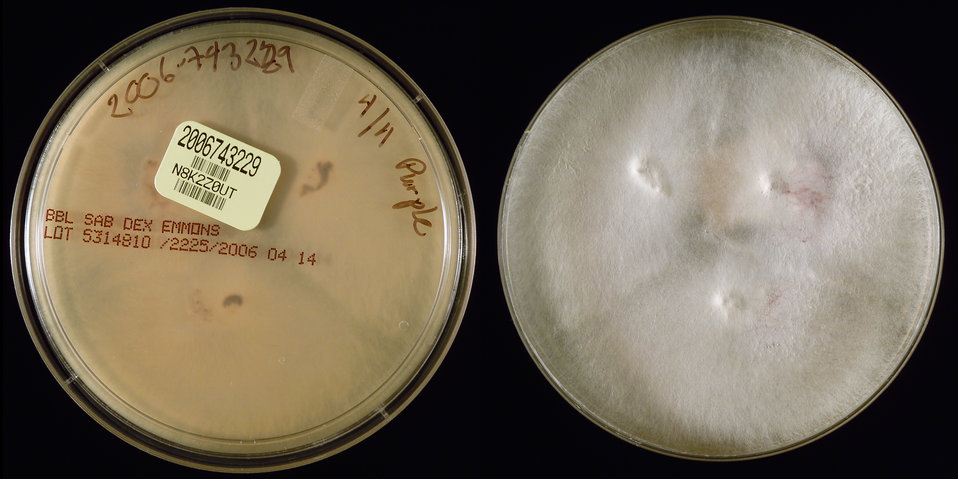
This image depicted two sides of a Petri dish, which had been inoculated with a specimen extracted from an opened bottle of contact lens solution, obtained from a New Jersey Fusarium keratitis-patient, and had subsequently grown a filamentous colony of Fusarium oxysporum fungal organisms. The type of agar medium in the case of this specimen was Sabouraud Dextrose (SAB). While it is not unusual for Fusarium to cause keratitis, it was the number of affected individuals, which had increased dramatically, predominantly in persons wearing contact lenses, that had warranted this epidemiologic study. The laboratory received cultures which came from two sources: Fusarium spp. isolated from the eyes of patients with fungal keratitis, and cultures from contact lenses, cases and/or lens solution.